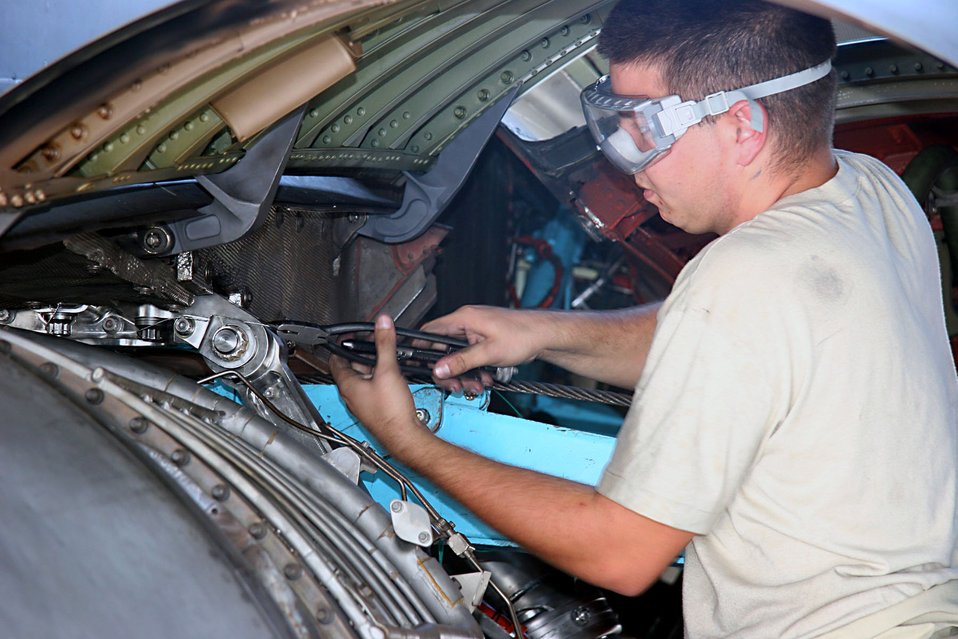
Desert KC-10 Engine Change

Airman 1st Class Louis Martens finishes installing safety wires on the engine mounts of a replacement engine on a KC-10 Extender Nov. 23. Airman Martens is with the 380th Expeditionary Aircraft Maintenance Squadron at an air base in Southwest Asia.